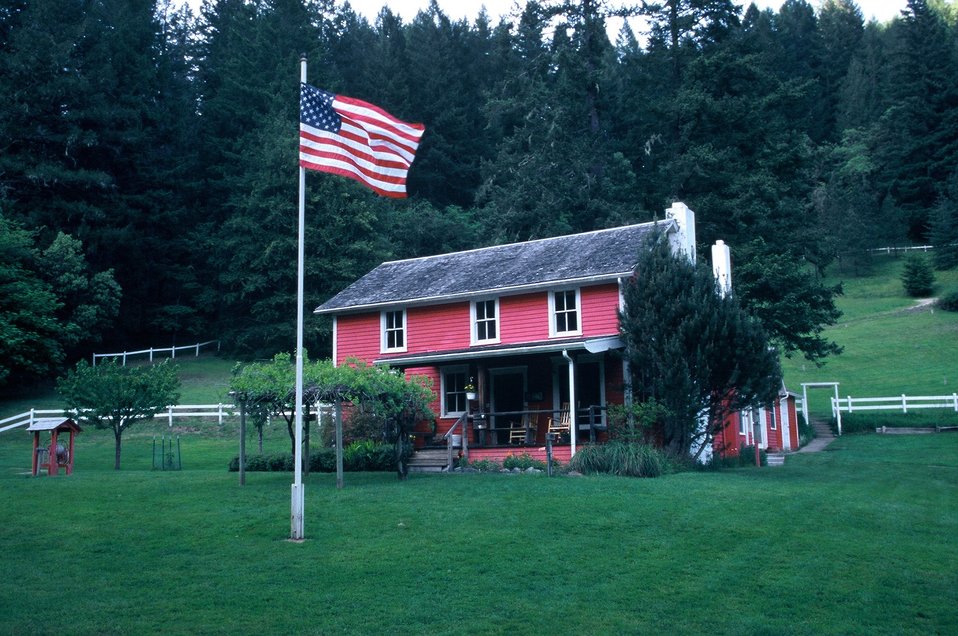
Wild section of the Rogue River from Grave Creek to Foster Bar May 19 to May 22.